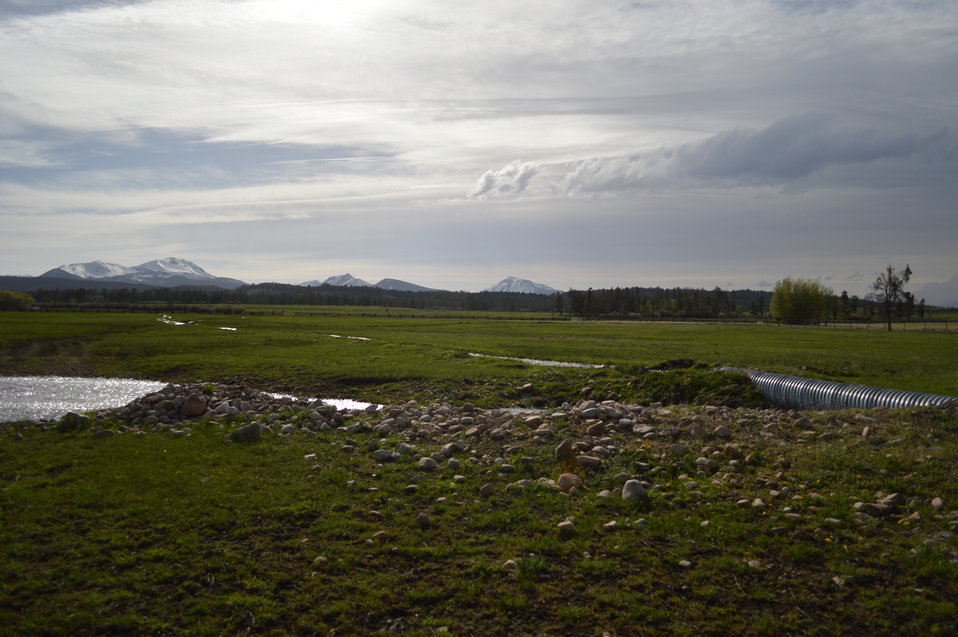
Regional Leadership Visit to Montana 2014